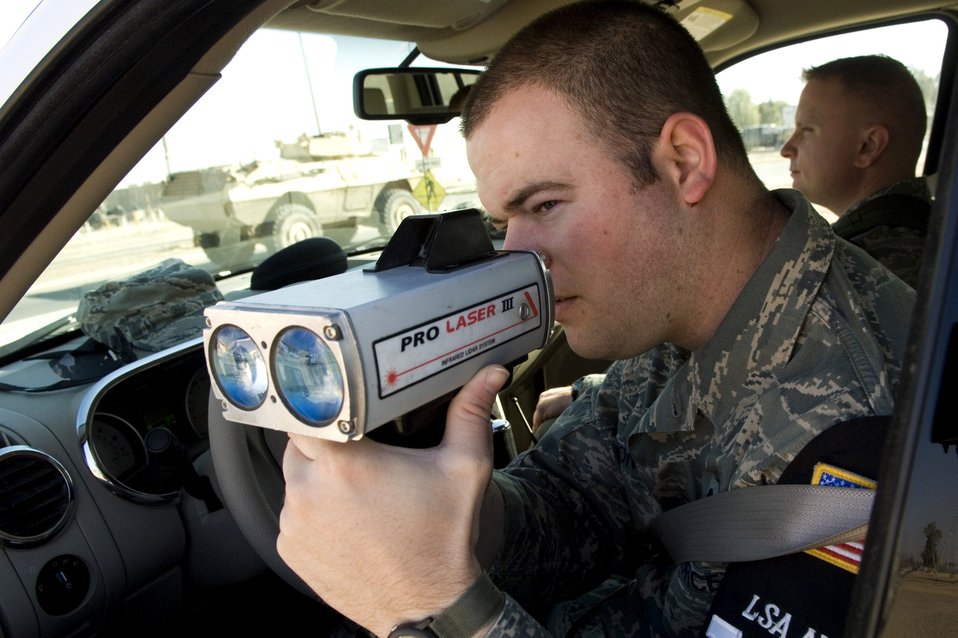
Balad Airmen keep order, maintain security

Airman 1st Class Brandon Sutton uses his infrared LIDAR speed detector to determine the speed of passing vehicles Dec. 27 at Balad Air Base, Iraq. Airman Sutton is a 332nd Expeditionary Security Forces Squadron Det. 1 Provost Marshal Office patrolman and deployed from McConnell Air Force Base, Kan.